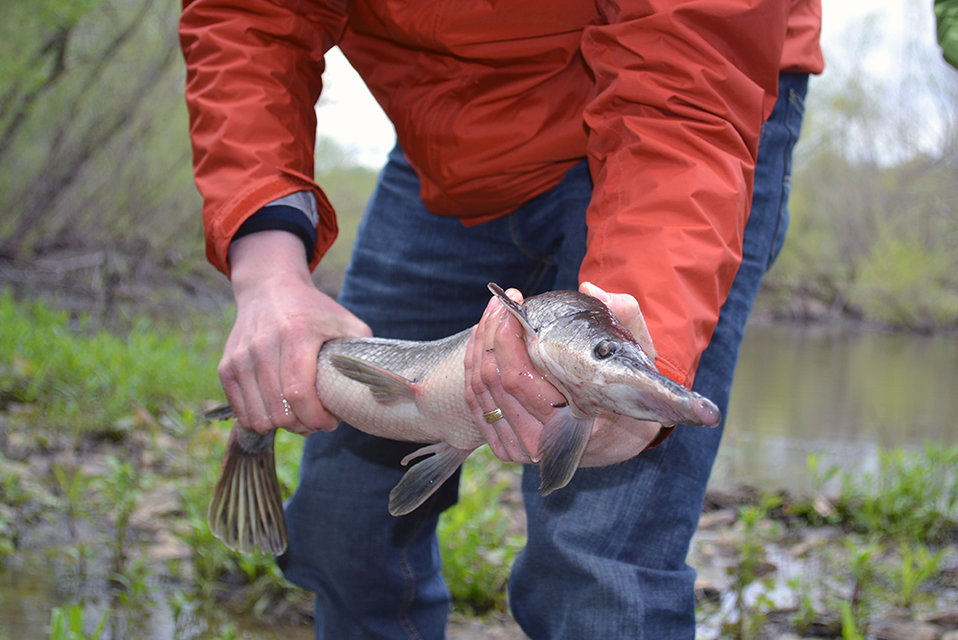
Saving a gar